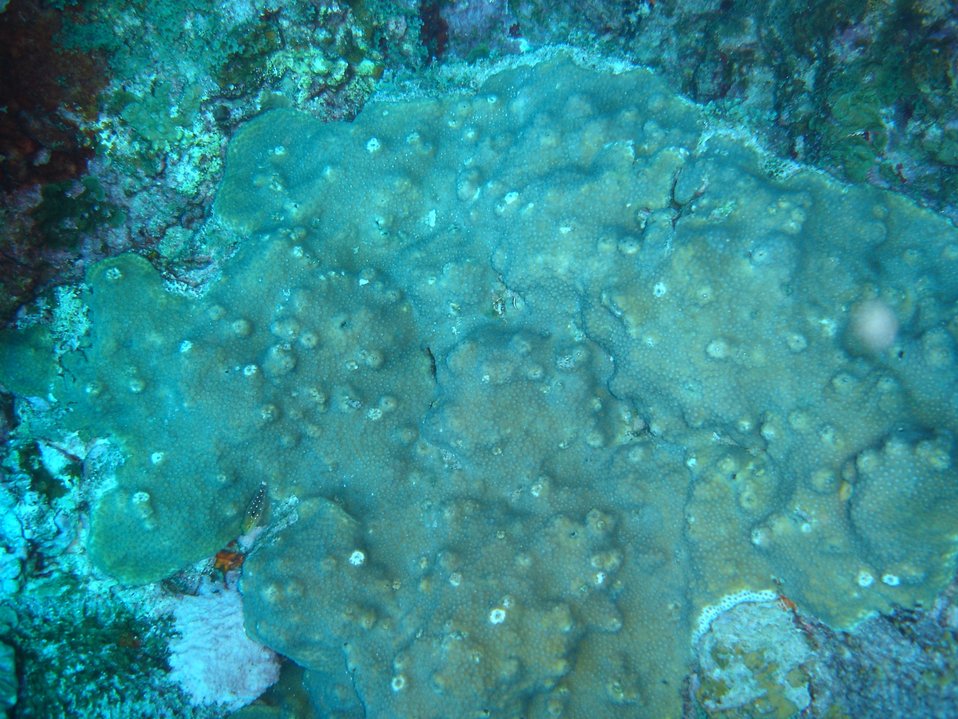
Montastraea franksi